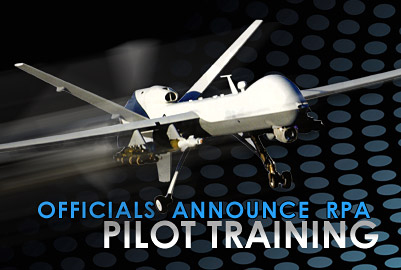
Air Force officials announce remotely piloted aircraft pilot training pipeline

Air Staff officials will institutionalize the remotely piloted aircraft pilot career field by establishing undergraduate RPA training.